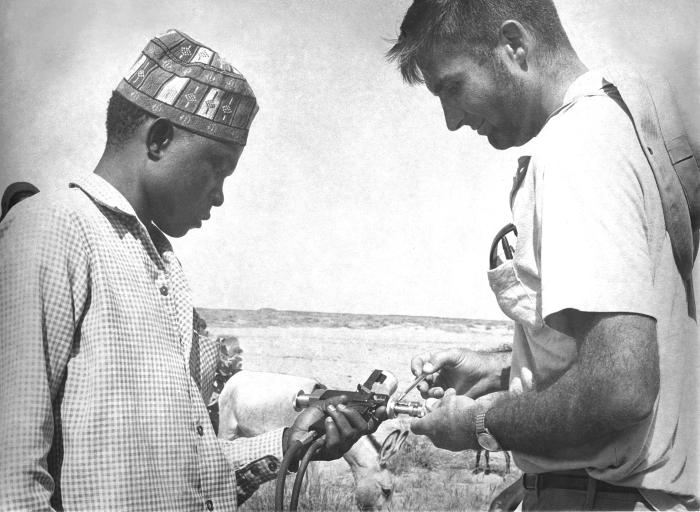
Here, Don Moore, M.D., a member of the Niger Smallpox Eradication Prospection Team, describes the mechanics of a Jet-Injector.